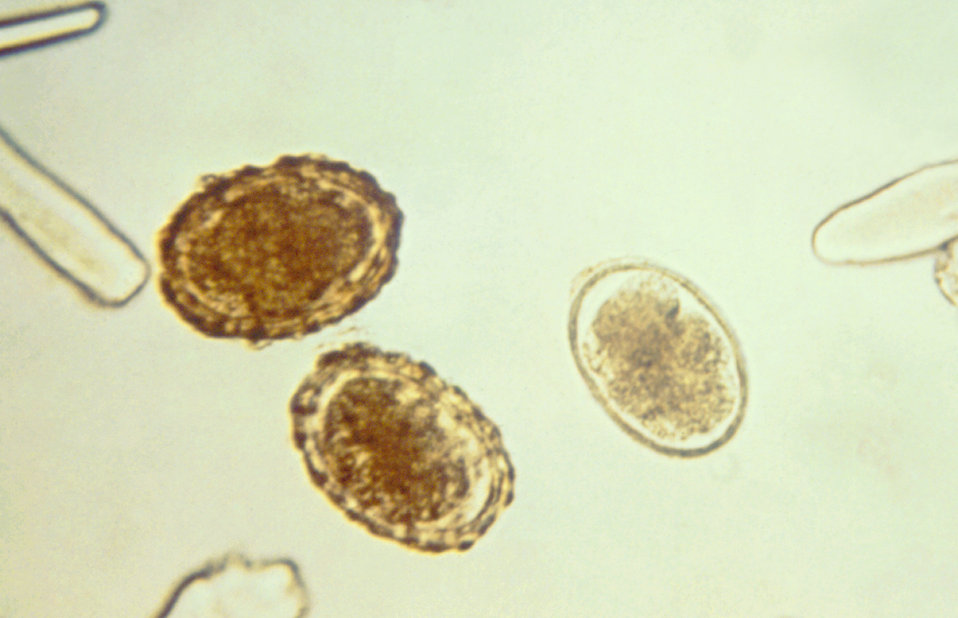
These are 3 fertilized A. lumbricoides eggs with the one on the right being decorticated, for its outer layer is absent.